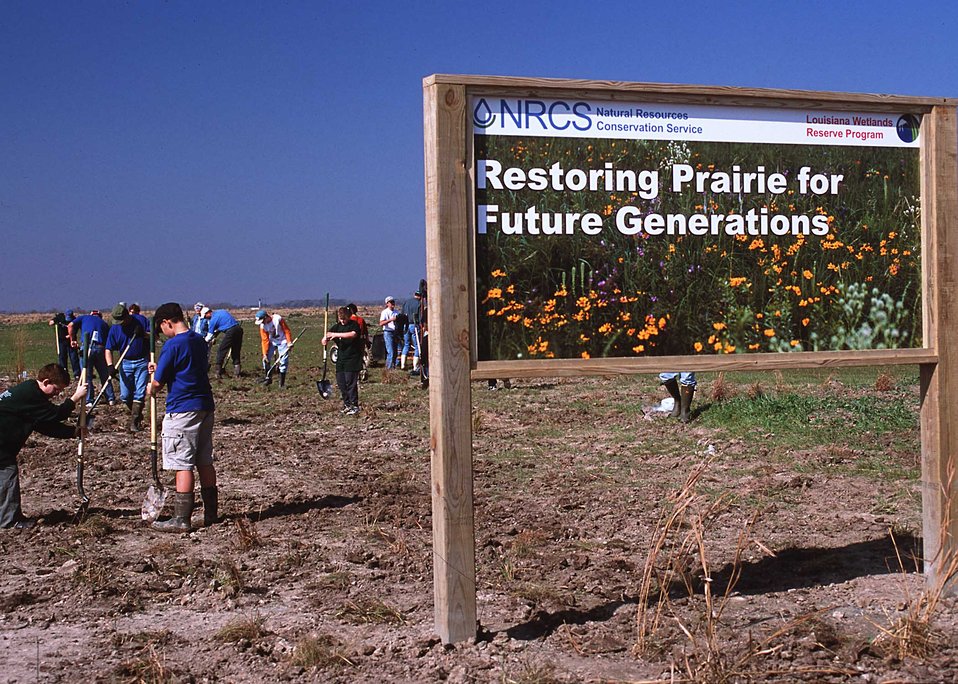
Earth team volunteers of NRCS help transplant native prairie plants from a roadside near Gueydan, Louisiana, to a restored wetland nearby.